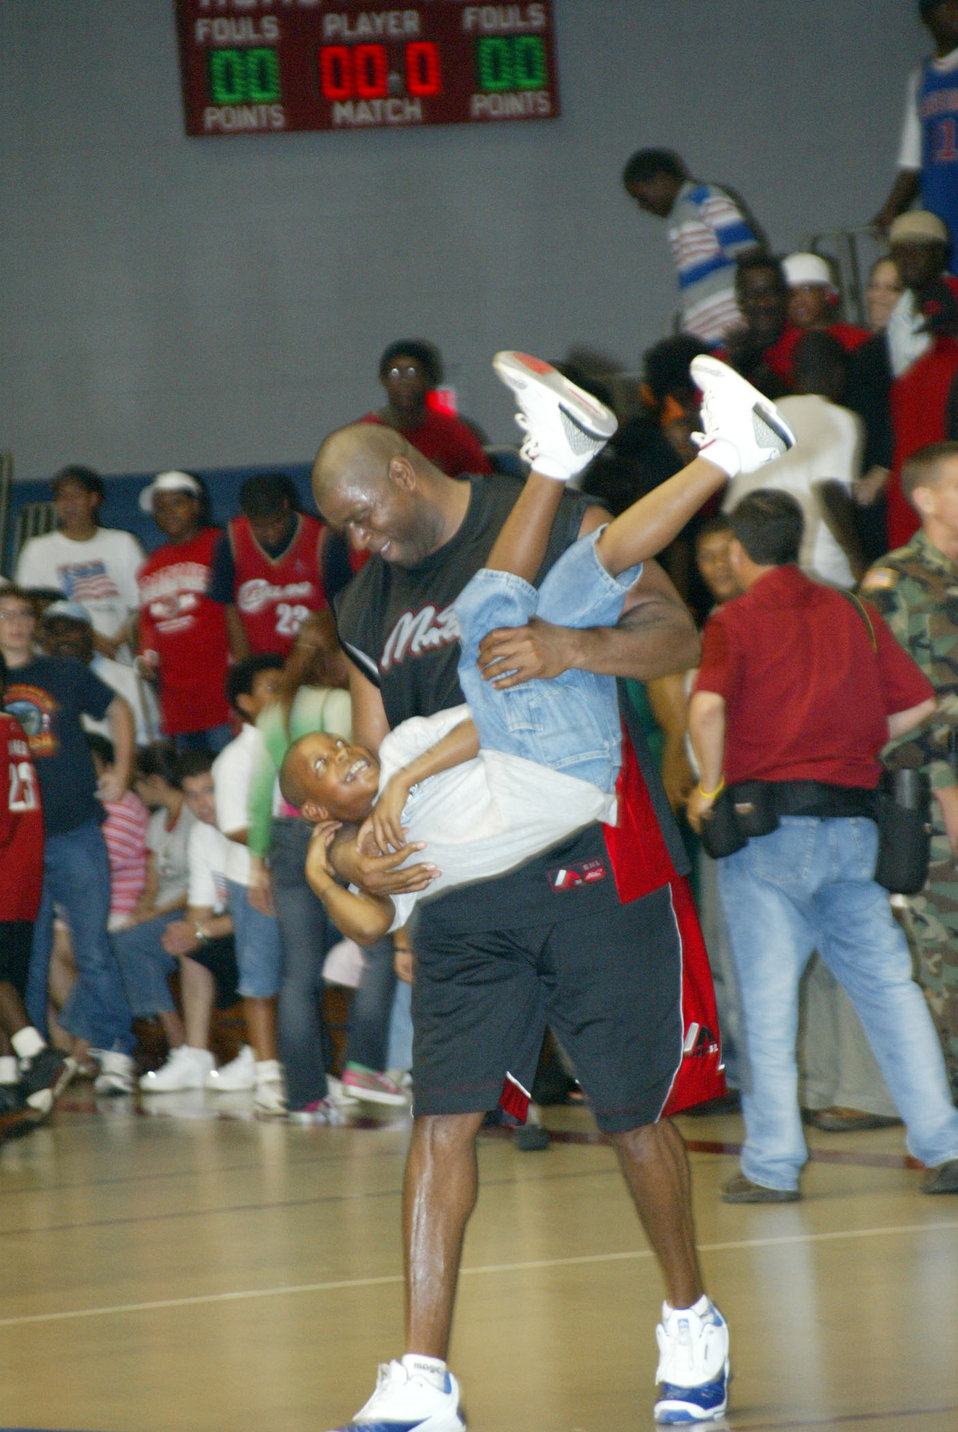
'Magic' comes to North Carolina

FORT BRAGG, N.C. -- Qunicy Lewis, 10, gets a lift from NBA great, Earvin